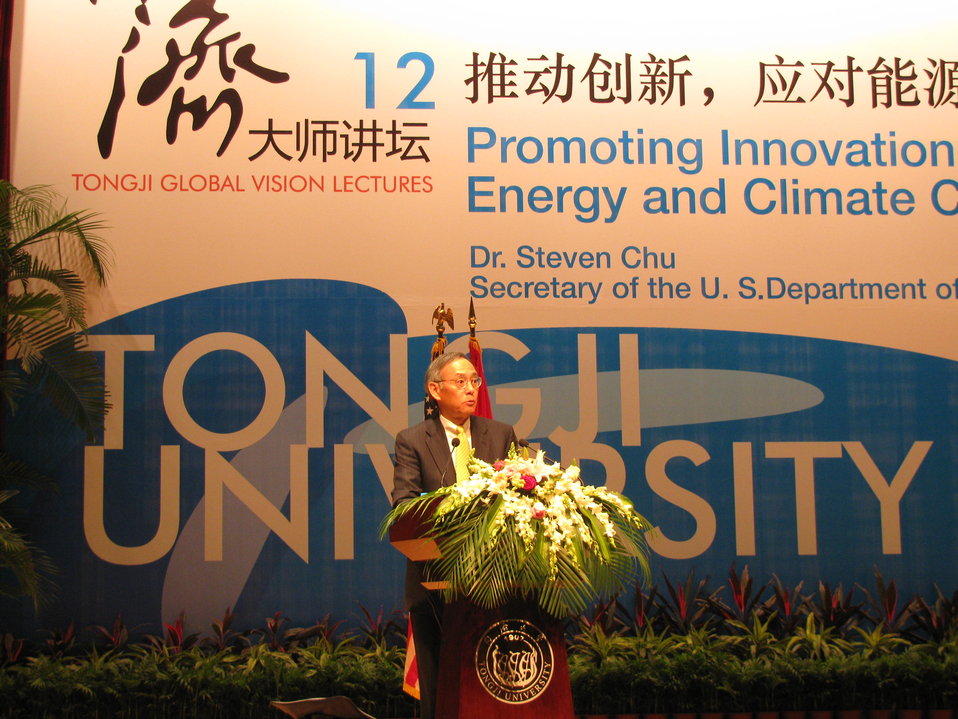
Shanghai 049